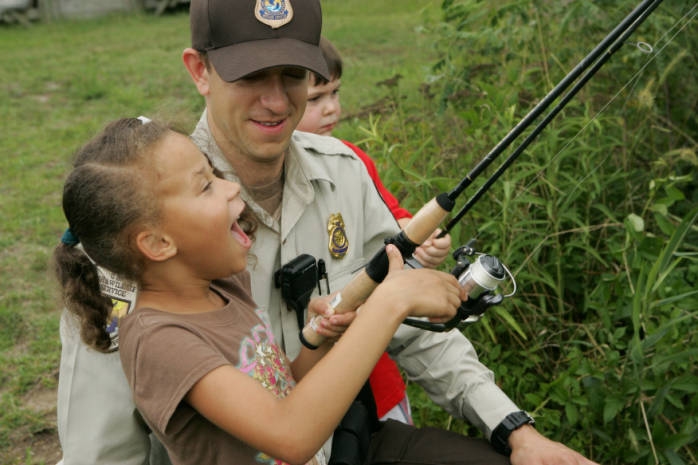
Fishing lesson